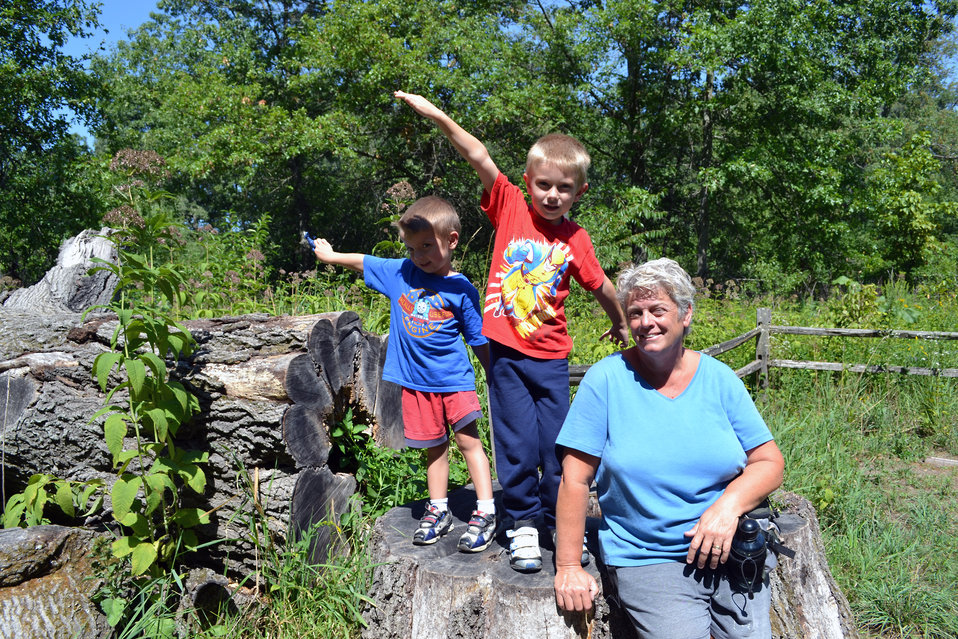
Adventuring

The Sentinel is a special tree for Debbie. She and her grandsons had fun visiting.